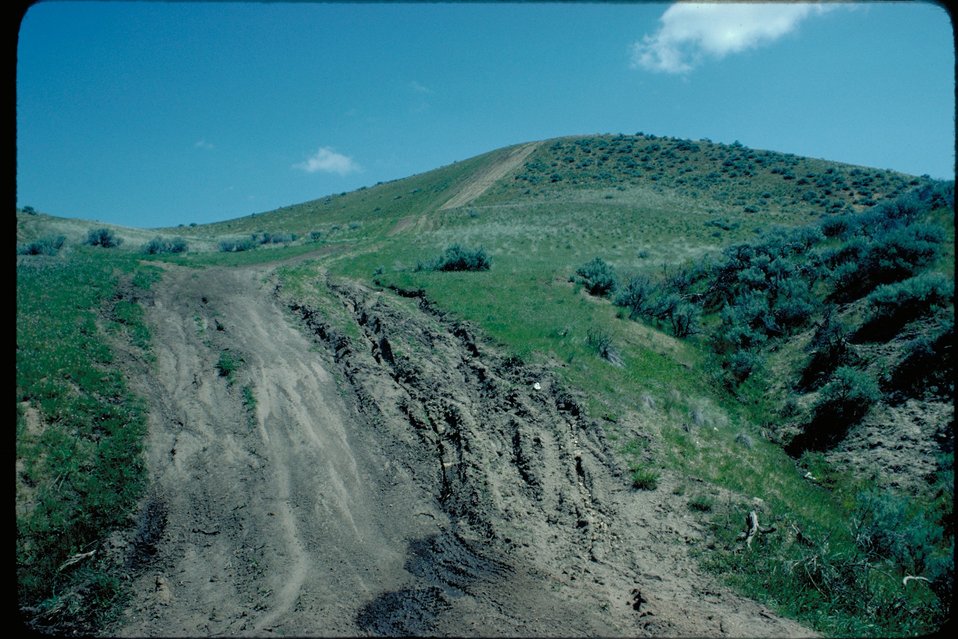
Trail erosion Boise Front Four Rivers Field Office LSRD Lower Snake River District